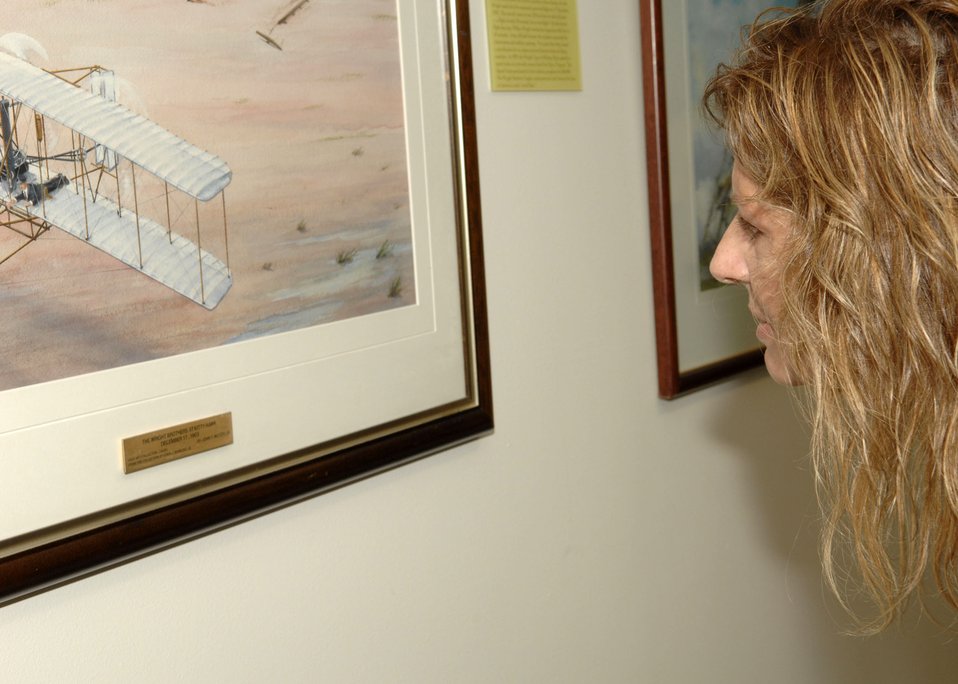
Fine Detail

WASHINGTON - Artist Mia Tavonatti looks at the fine detail of a painting by John T. McCoy, Jr., after listening to Secretary of the Air Force Michael W. Wynne make a few remarks about Keith Ferris and the many other artists that participated in the Air Force's Art Program and 60th Anniversay Art Exhibit. The secretary then cut the ribbon to commemorate the viewing of the numerous paintings highlighting the Air Force' s history here at the Pentagon Oct. 19, 2006.